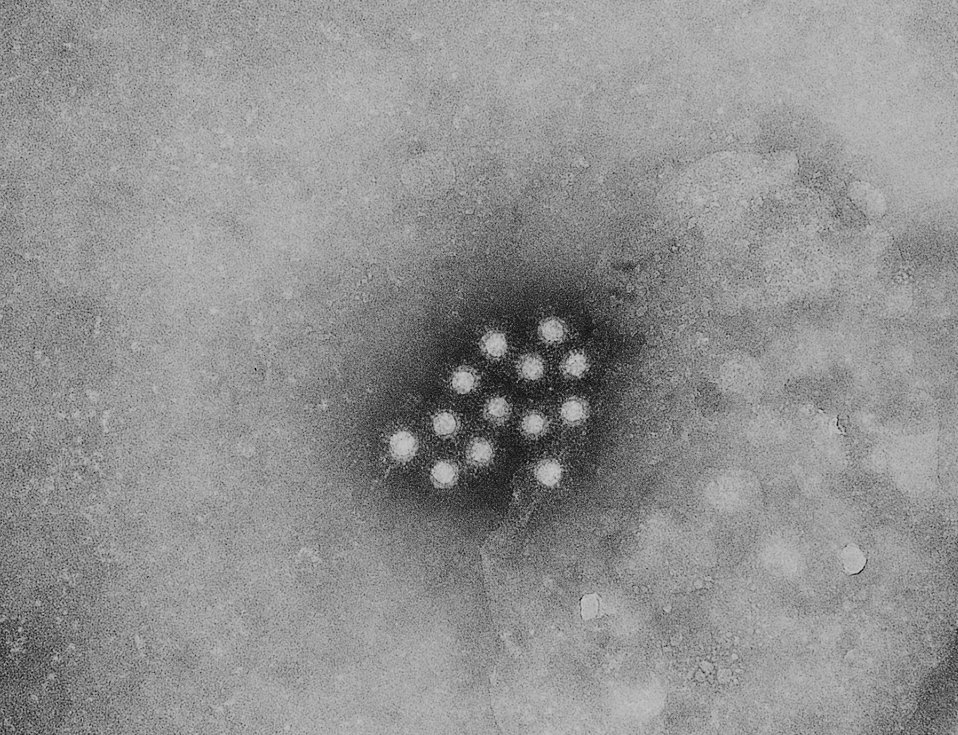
An electron micrograph of the Hepatitis A virus (HAV), an RNA virus that can survive up to a month at room temperature.